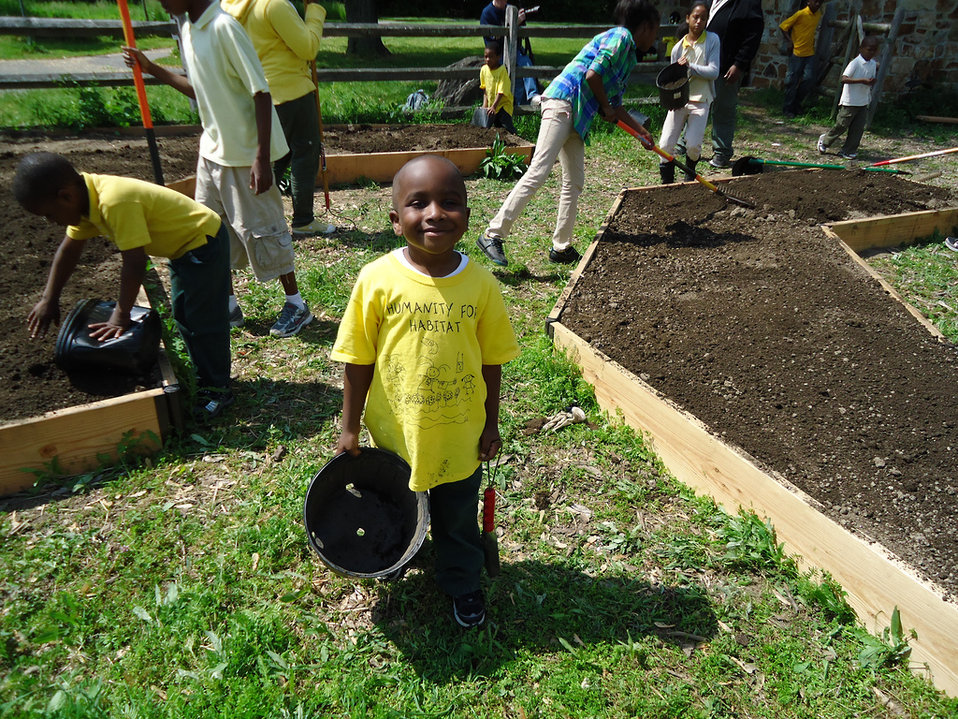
planting a pollinator garden

John Heinz National Wildlife Refuge, PA